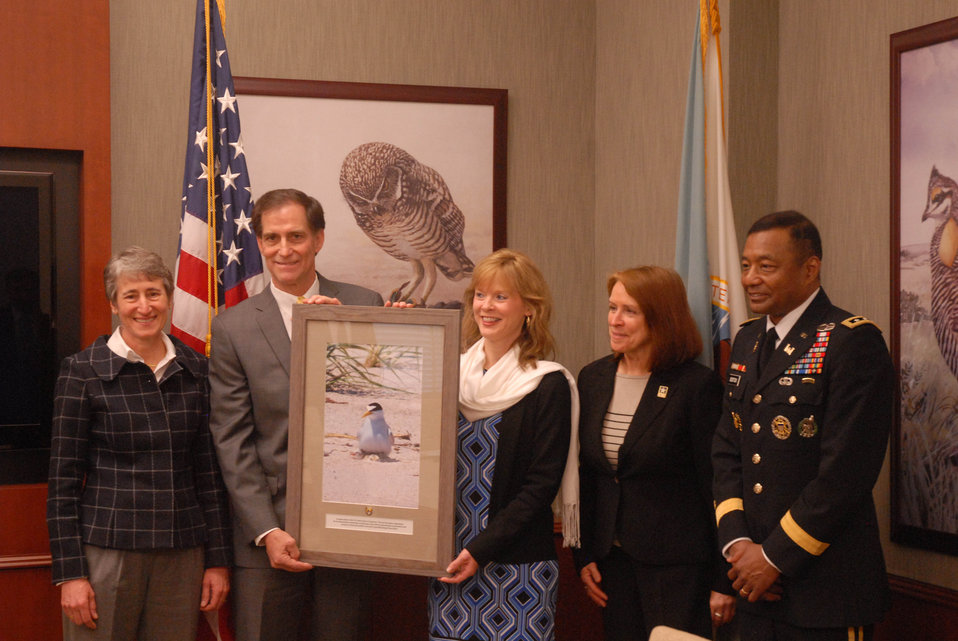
DOIFWS-Corps2

Secretary of the Interior Sally Jewell, U.S. Fish and Wildlife Service director Dan Ashe recognize Beth Fleming, Director of the Corps’ Environmental Laboratory,Assistant Secretary of the Army for Civil Works Jo-Ellen Darcy, and U.S. Army Corps of Engineers commanding general Lt. Gen. Thomas P. Bostick for an innovative landscape-level conservation approach. (Shown: Commemorative photo with plaque of Interior least tern with chick on nest) Photo by Gavin Shire, USFWS (public domain photo)

FOR IMMEDIATE RELEASE APRIL 30, 2014

PHOTOS ON FLIKR/SOUTHEAST

Contacts: USFWS: Tom MacKenzie, 404-679-7291, tom mackenzie@fws.gov
USACE: Gene Pawlik, 202-761-7690, Eugene.A.Pawlik@usace.army.mil

U.S. Fish and Wildlife Service Director Honors U.S. Army Corps of Engineers for Innovative Landscape-Level Conservation Approach

Washington D.C. – U.S. Fish and Wildlife Service Director Dan Ashe yesterday praised a collaborative effort across the lower Mississippi River Basin with the U.S. Army Corps of Engineers (USACE) that has helped advance conservation for three endangered species.

The collaboration highlights the responsibility and opportunity for all federal agencies to conserve endangered and threatened species under the Endangered Species Act (ESA). This joint effort by the Corps and the Service proves that by working to incorporate the needs of threatened and endangered species in the work that they do, federal agencies can help species recover.

Specifically, it lays the foundation for broad habitat conservation actions that will help scientists meet population objectives more quickly for the Interior least tern, pallid sturgeon and fat pocketbook mussel. The resulting habitat improvements will also benefit other fish and wildlife reliant on the Mississippi River Basin.

Both the overall approach and the techniques the agencies have developed under it can be implemented nationwide.

“The U.S. Fish and Wildlife Service and the U.S. Army Corps of Engineers are seeing positive conservation results already thanks to steps included in this cost-effective approach,” said Ashe. “This is significant as it demonstrates that conservation can coexist with transportation, national security, and the region’s economic needs.”

The success stems from progressive steps the Corps and Service took under Section 7(a)(1) of the ESA that helped pave the way for subsequent consultations under the act. The end result was a transformation of the Corps’ Channel Improvement Program – a flood control and navigation strategy from a primary threat into a primary conservation tool for the three listed species. The Corps is using water and sediment that previously flowed directly down the river to now enhance aquatic habitats in the lower Mississippi River Basin. This will provide better opportunities for Americans to fish, bird watch and boat on one of our nation’s greatest rivers. Not only will the listed species benefit, so will recreational species such as bass, catfish and crappie, boosting local economies.

'Together the U.S. Army Corps of Engineers and US Fish and Wildlife Service have built a foundation for future cooperation,” said Assistant Secretary of the Army for Civil Works Jo-Ellen Darcy. “This harmonious approach will avoid huge amounts of work and money for both agencies moving forward, all while best serving the Interior Least Tern, the pallid sturgeon and the fat pocketbook mussel.'

Thanks to the steps taken that are included in this plan, the population status of all three species is improving. Indeed, a recently completed five-year review for the Interior least tern recommended delisting it due to recovery, citing an increase in the tern population from 6,000 to 10,000 birds. The Service is now in the process of putting in place the necessary monitoring plans, conservation agreements, and population models in hopes of moving forward with a proposed delisting in the near future.

“The U.S. Army Corps of Engineers appreciates this recognition today of the successful collaboration between our agencies and specific contributions by USACE team members,” said Lt. Gen. Thomas P. Bostick, U.S. Army Corps of Engineers commanding general. “The Corps of Engineers, together with our partners, is committed to a 200-year vision for the Mississippi Watershed – America’s Watershed – that balances the Nation’s needs, such as flood risk reduction and management, environmental sustainability, and recreation. The Lower Mississippi Conservation Plan is a stellar example of that commitment.”

The approach has also been credited with expanding the fat pocketbook mussel population into new areas and with increased pallid sturgeon numbers, all with no negative effects on critical flood control or navigation missions.

“This is really a milestone in conservation thinking and planning,” said Ashe. “It goes to show that when agencies plan ahead for conservation, it pays off all around, both in terms of saving money and staff time, as well as benefiting our nation’s wildlife resources for the American people.”

The Service is using the success of the Corps’ Mississippi Valley Division conservation program to bolster efforts to expand this approach nationwide for both agencies and is looking at similar opportunities with other federal agencies.

About The U.S. Fish and Wildlife Service
The mission of the U.S. Fish and Wildlife Service is working with others to conserve, protect, and enhance fish, wildlife, plants, and their habitats for the continuing benefit of the American people. For more information on our work and the people who make it happen, visit www.fws.gov. Connect with our Facebook page at www.facebook.com/usfwssoutheast, follow our tweets at www.twitter.com/usfwssoutheast, watch our YouTube Channel at www.youtube.com/usfws and download photos from our Flickr page at www.flickr.com/photos/usfwssoutheast.